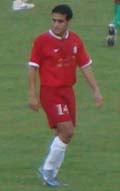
Libyan footballer. 'i did Take this Photo in 11 June stadium during the Libyan Cup Match Between Al Ittihad Vs Al Akhdar By my Sony N2 Digital cam. sorry for the bad quality of the photo'